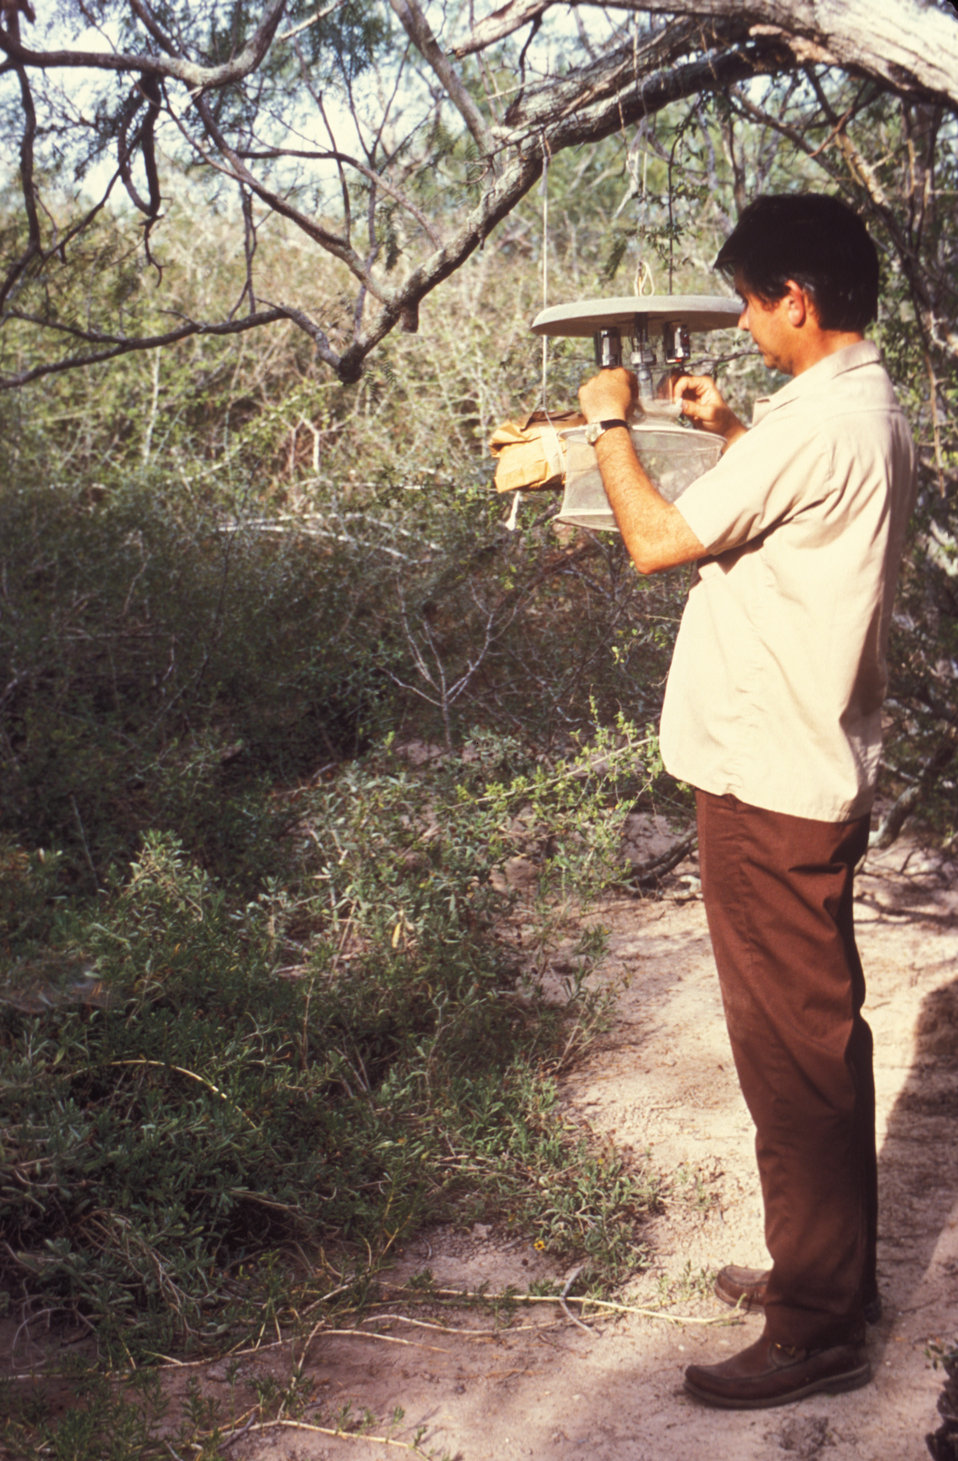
This technician is setting up a CDC light trap used to collect mosquitoes in the field.